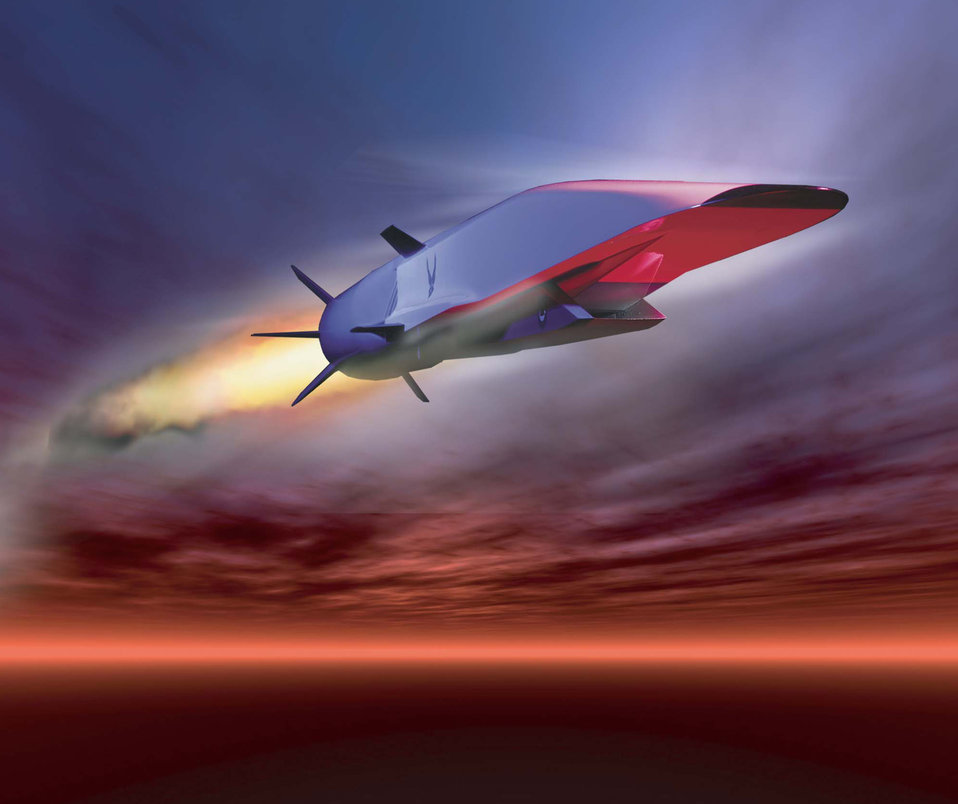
X-51A Waverider

The X-51A Waverider is set to demonstrate hypersonic flight. Powered by a Pratt & Whitney Rocketdyne SJY61 scramjet engine, it is designed to ride on its own shockwave and accelerate to about Mach 6.